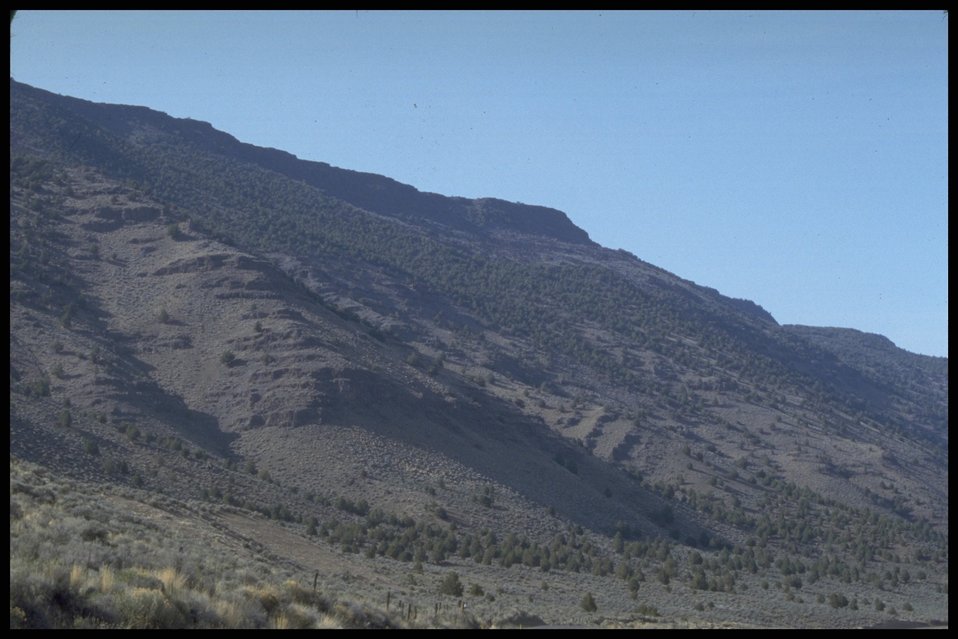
Scenic view from Deep Creek Campground, Lakeview District.